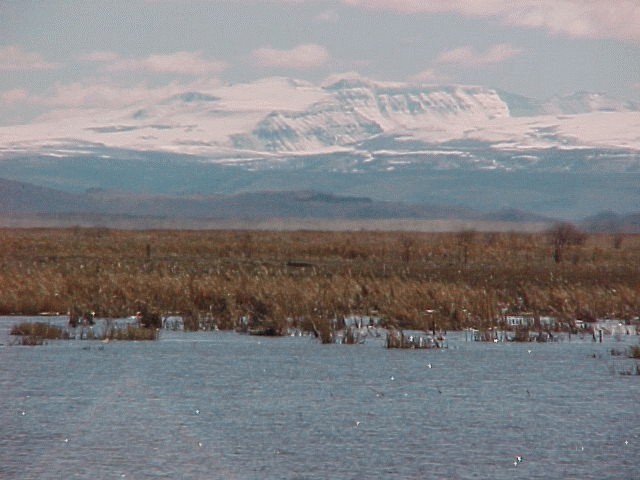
malheur refuge, Steens over Wetlands

The Steens rise over the wetlands at Malheur National Wildlife Refuge in Oregon.